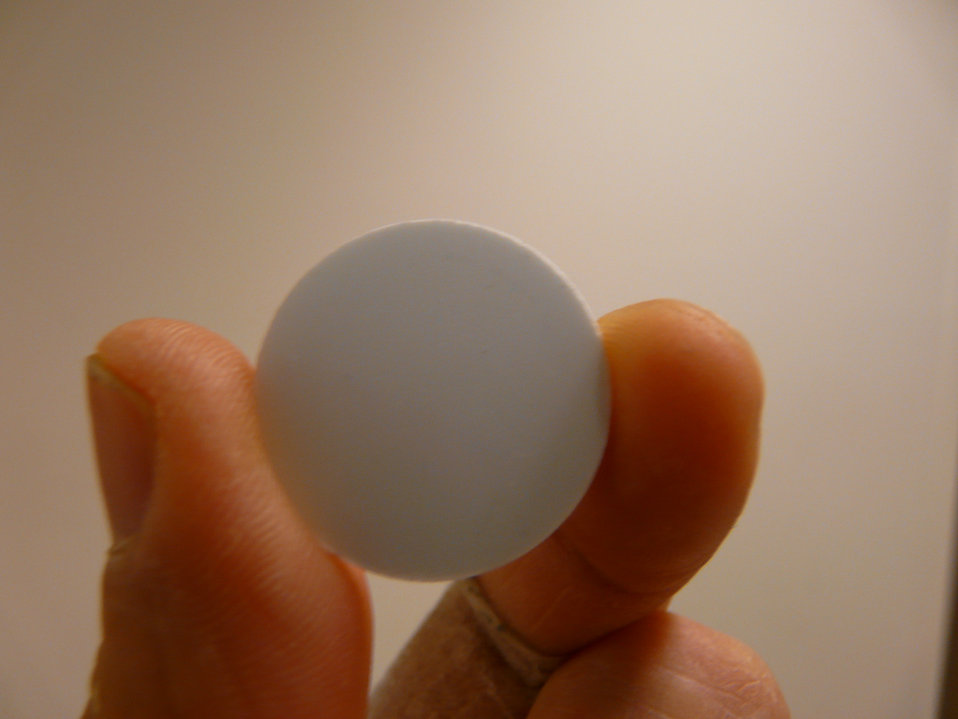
Thin Beta-Alumina Electrolyte Membrane used in a new, planar sodium-beta battery design being developed by Eagle Picher Technologies and Pacific Northwest National Laboratory.